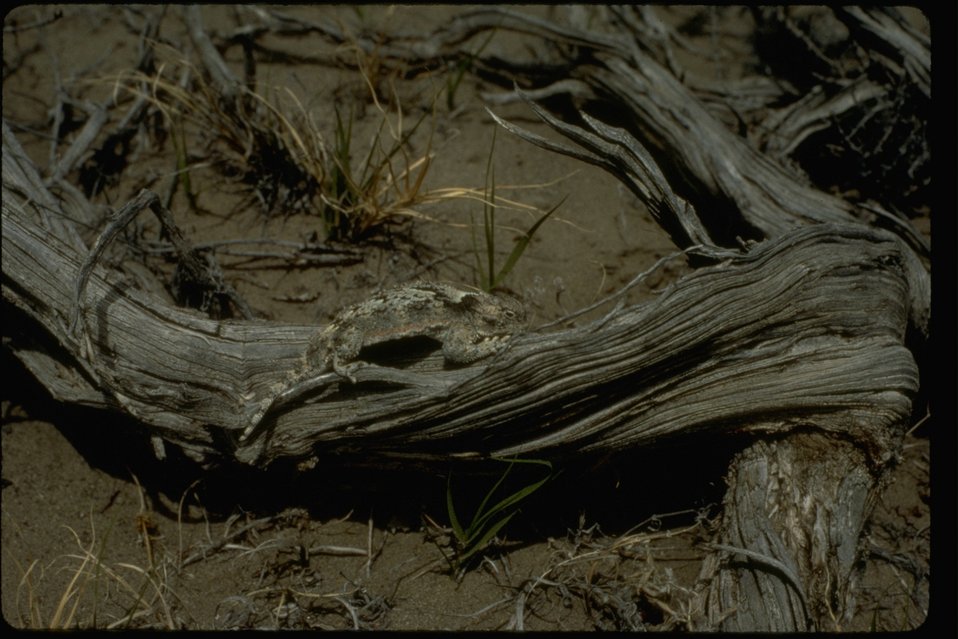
Lizard on dead sagebrush at East Alvord Wilderness Study Area. OR 2-73A